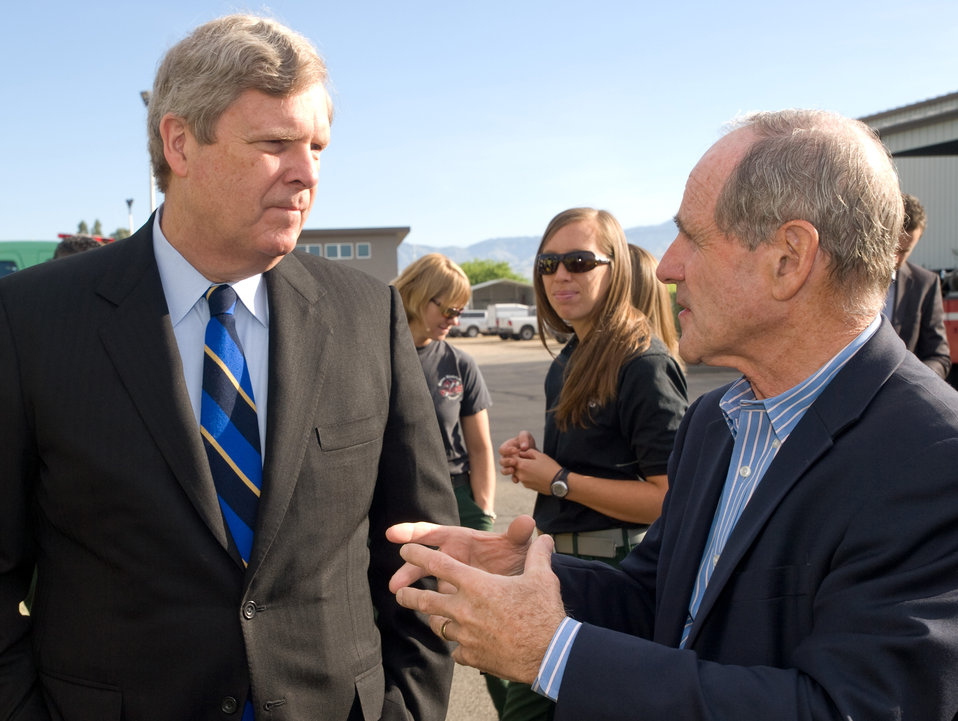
Agriculture Secretary Tom Vilsack tours the National Interagency Fire Center (NIFC) in Boise, ID on Monday, May 13, 2013. Agriculture Secretary Vilsack and Interior Secretary Jewell provided an outlook for the upcoming fire season and outlined the federal government’s efforts to ensure collaboration in protecting Americans from wildfire.